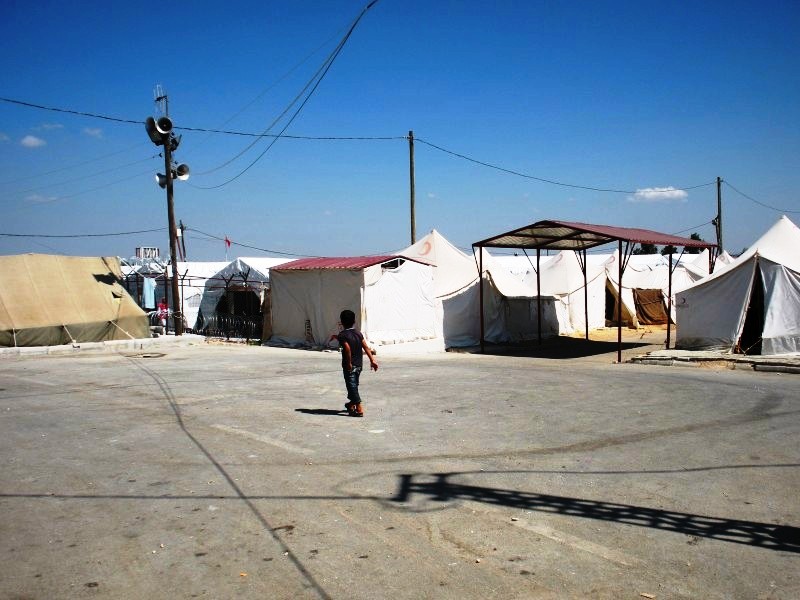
A Syrian Boy Walks at a Camp in Turkey

A Syrian boy walks at a camp in Hatay Province, Turkey, September 2012.